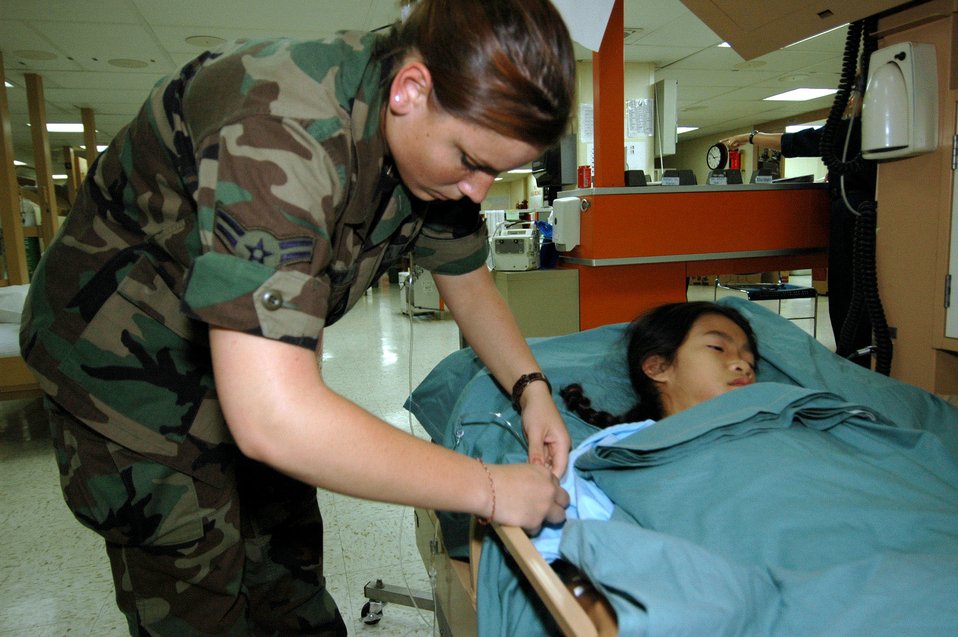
Aboard the USNS Mercy

Airman 1st Class Kristen Lynch replaces a patient's intravenous tube aboard the U.S. Navy hospital ship USNS Mercy while at a stop at Simeulue Island, Indonesia, on July 15. The Mercy is in the third month of a scheduled five-month deployment, conducting humanitarian and civic assistance in South and Southeast Asia and the Pacific Islands. Airman Lynch is one of several Air Force medical professionals on the ship.